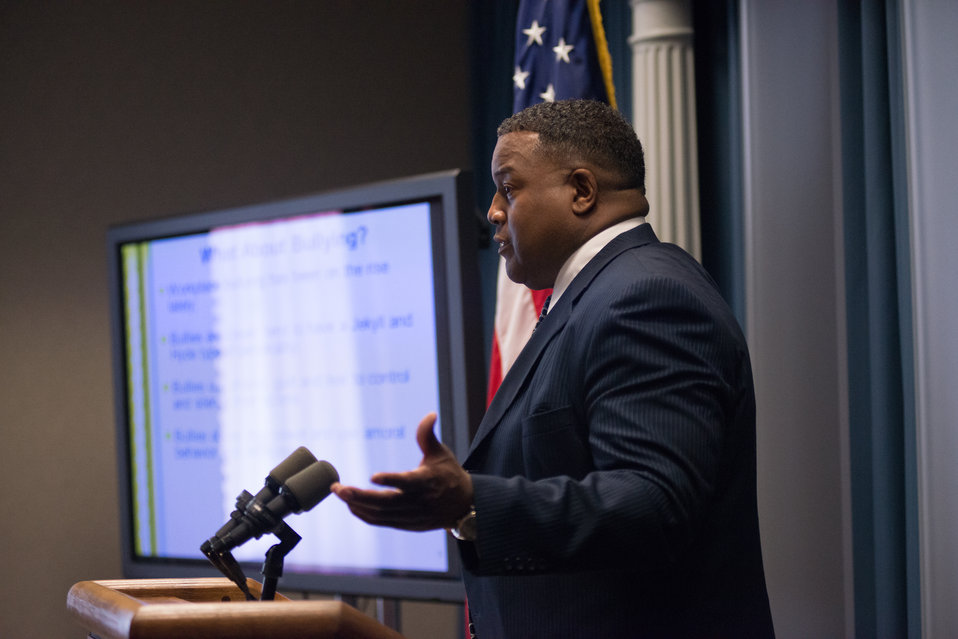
Bureau of Engraving and Printing Alternative Dispute Resolution Steering Committee member and mediator Leonardo Rowe leads the forum on Workplace Bullying during the U.S. Department of Agriculture (USDA) Rural Development’s (RD) 2nd Annual Cultural Transformation kickoff opening ceremony and forums, themed “Employees Influencing Change,” on Tuesday, Aug. 13, 2013 at USDA in Washington, D.C.